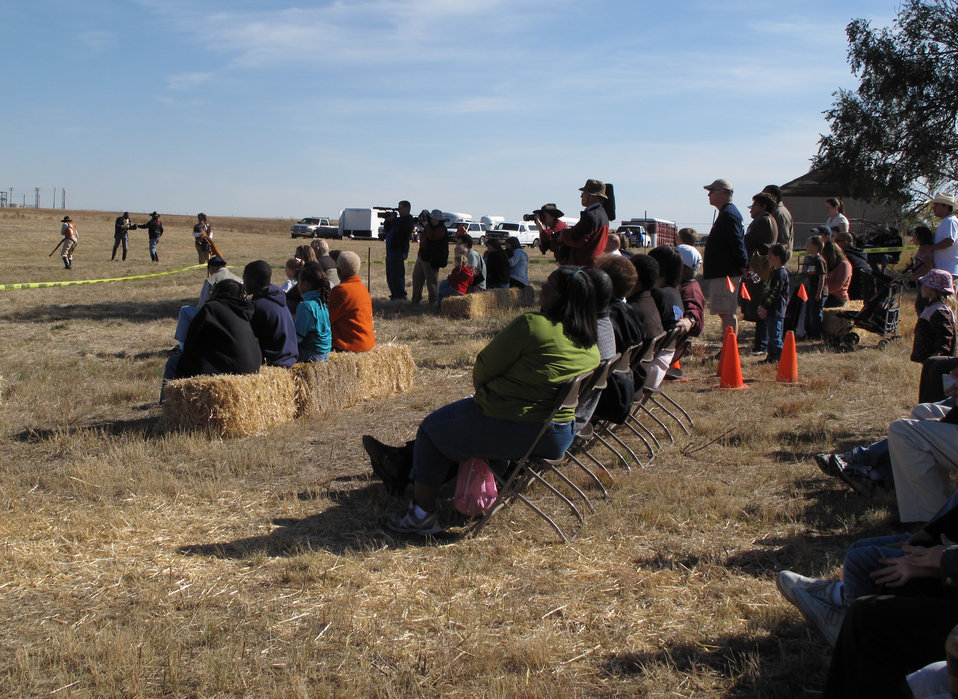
Refuge Round-up 2010

Crowd watching the saloon reenactment.